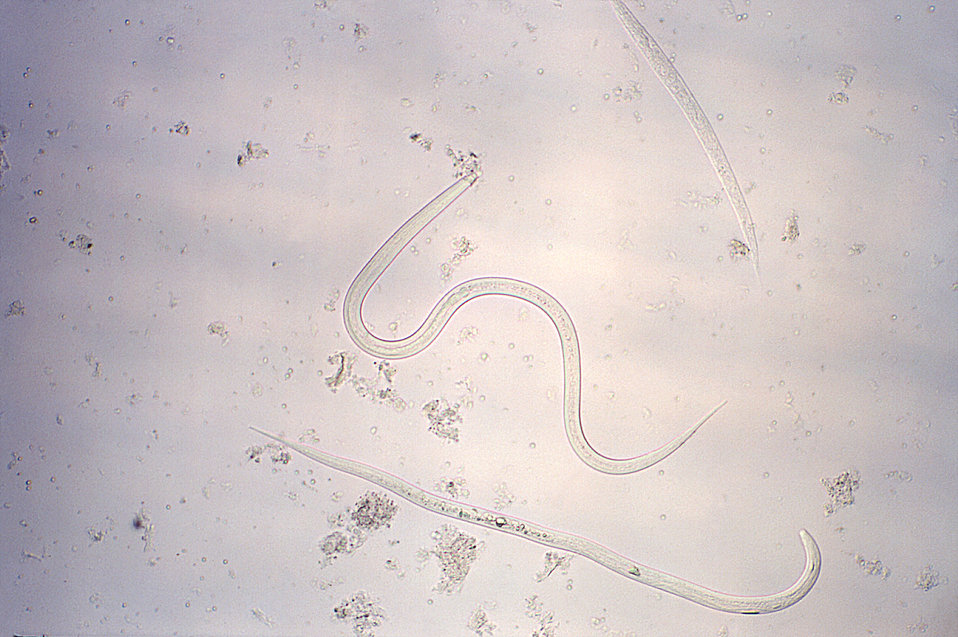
Strongyloides filariform larvae.